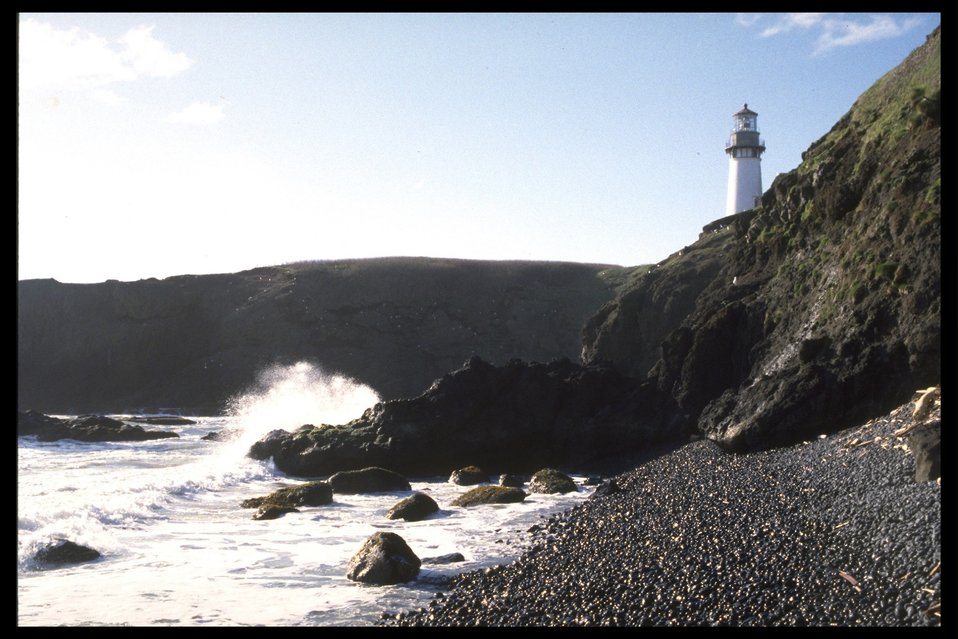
Yaquina Head Lighthouse.